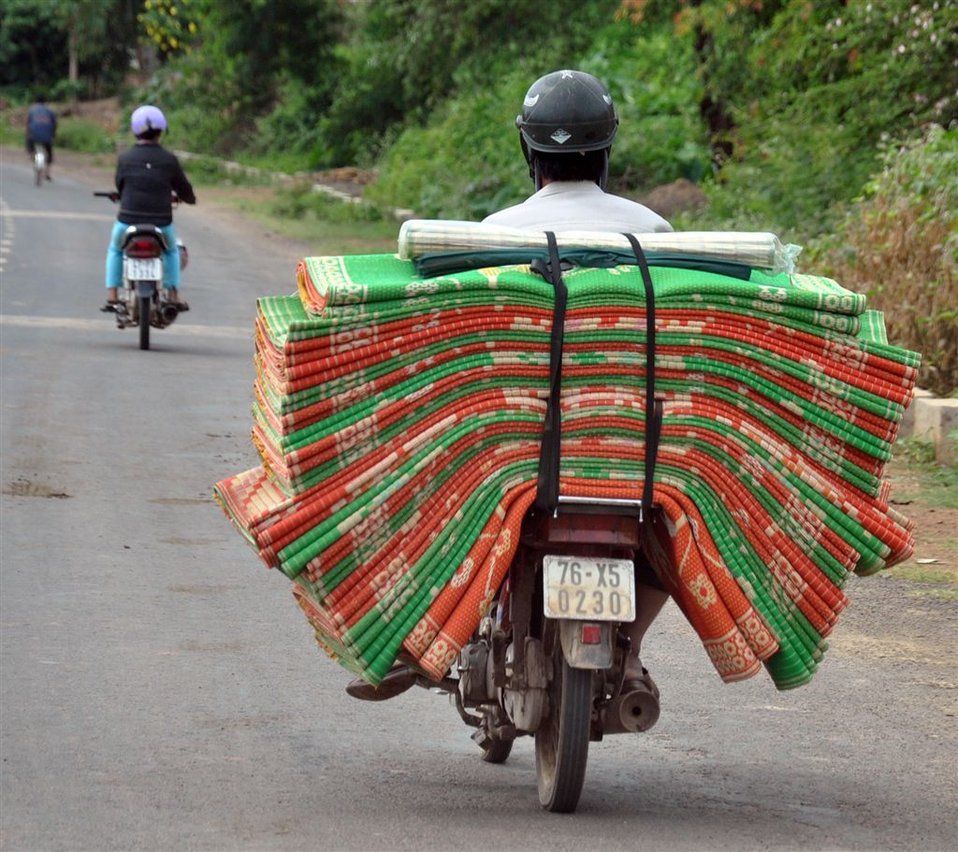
Local populations benefit from new cocoa crop techniques and market access.